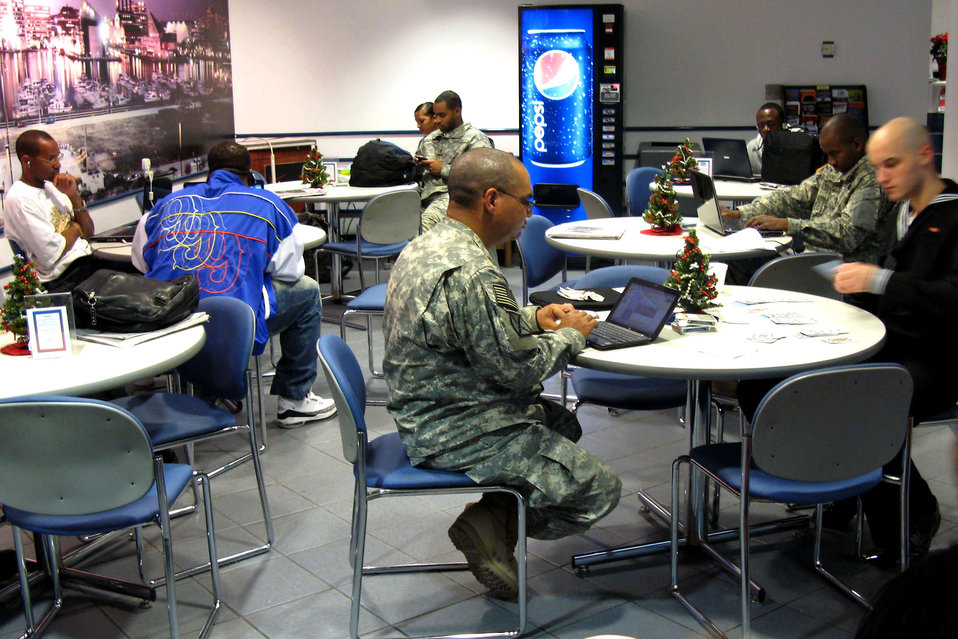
USO offers respite from traveling frenzy

The USO Lounge at Baltimore-Washington International Thurgood Marshall Airport offers military travelers a respite from crowded airport terminals, particularly during the holiday season Dec. 23, 2009.